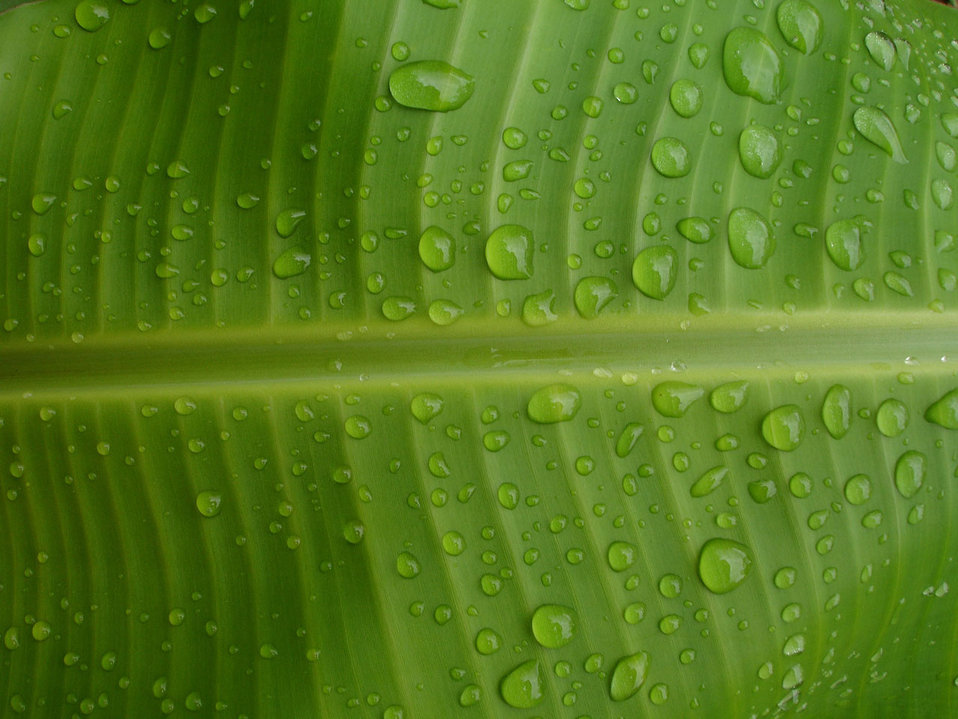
Banana leaf.